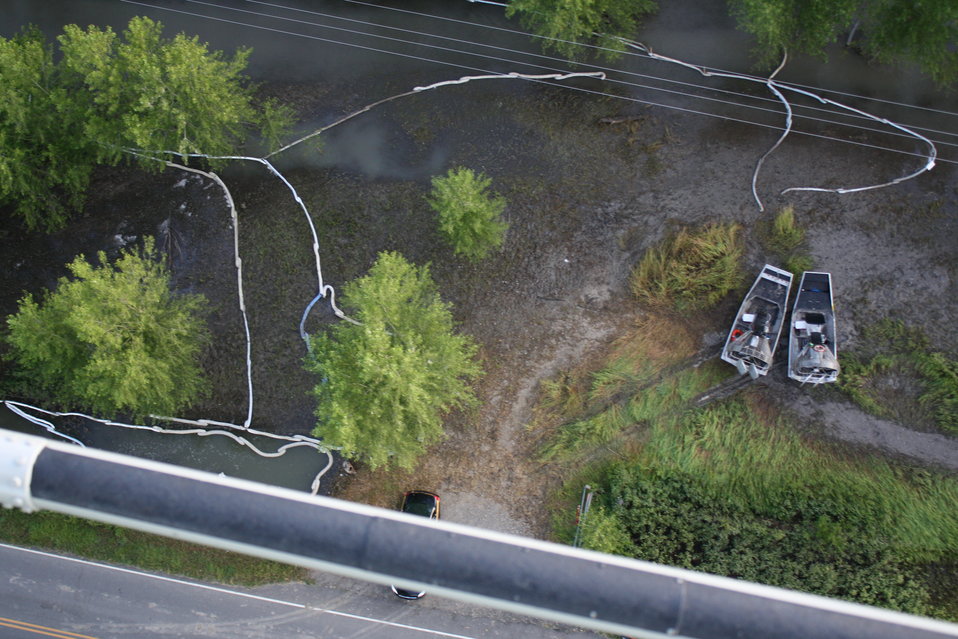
Aerial View of Oiled Shoreline

U.S. Fish and Wildlife Service Environmental Contaminants Specialists regularly fly over the Silvertip Oil Spill to spot potentially oiled wildlife by looking for signs of distress. The locations of spotted wildlife are provided to avian specialists of International Bird Rescue (IBR) so that they may attempt capturing the affected wildlife. Additionally, the spotters note the oiled areas that intersect with prime habitat for species of concern. These areas are provided to IBR specialists for them to inspect by ground or water, weather permitting. Photo taken on July 20, 2011.